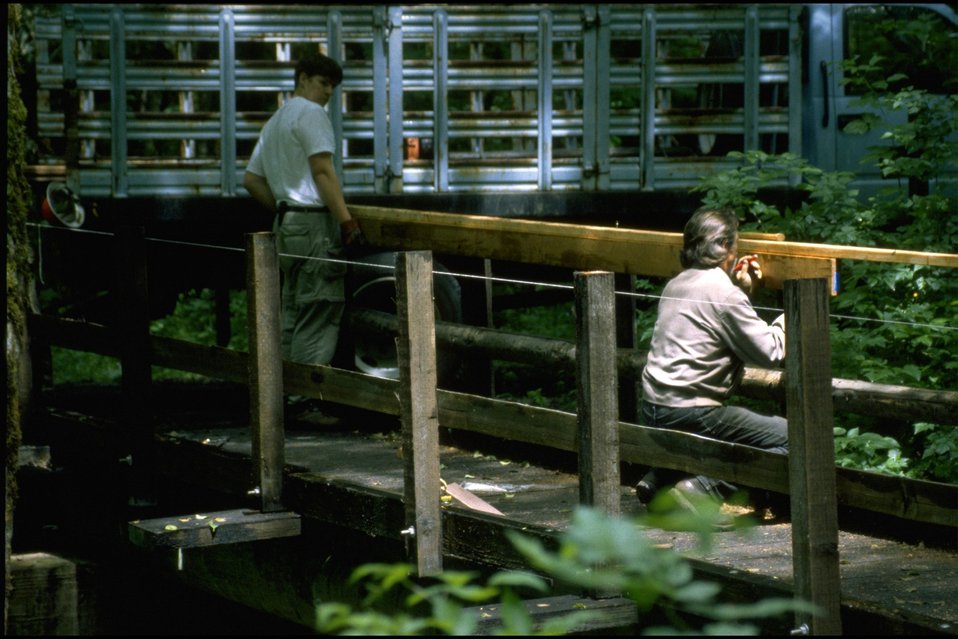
Clay Creek Bridge Project.